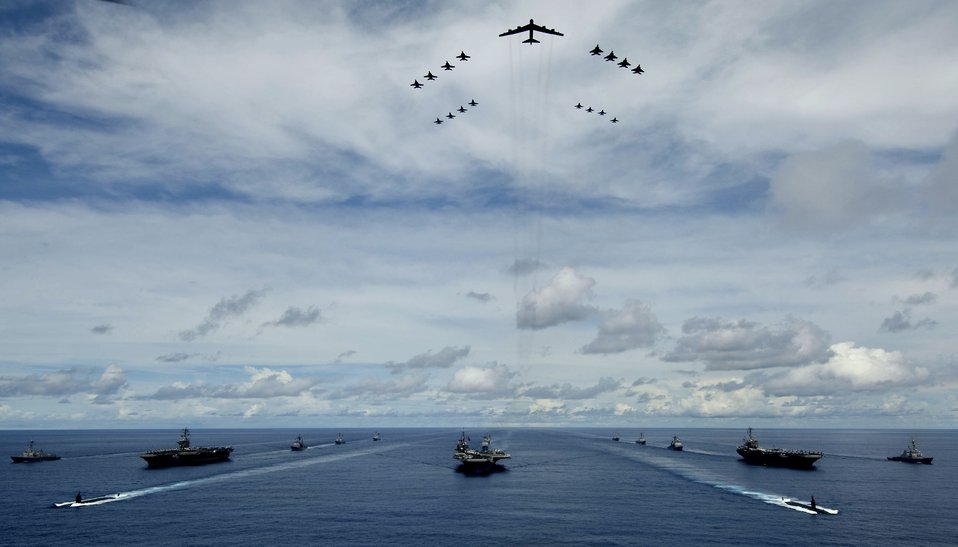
Exercise Valiant Shield wraps up

A B-52 Stratofortress leads a formation of Air Force and Navy F-16 Fighting Falcons, F-15 Eagles, and F-18 Hornetst over the USS Kitty Hawk, USS Nimitz and USS John C. Stennis Strike Groups during Exercise Valiant Shield exercise Aug.14 in the Pacific. The forces participated in Valiant Shield, the largest joint exercise in the Pacific this year. Held in the Guam operating area, the exercise includes 30 ships, more than 280 aircraft and more than 20,000 servicemembers from the Navy, Air Force, Marine Corps, and Coast Guard.